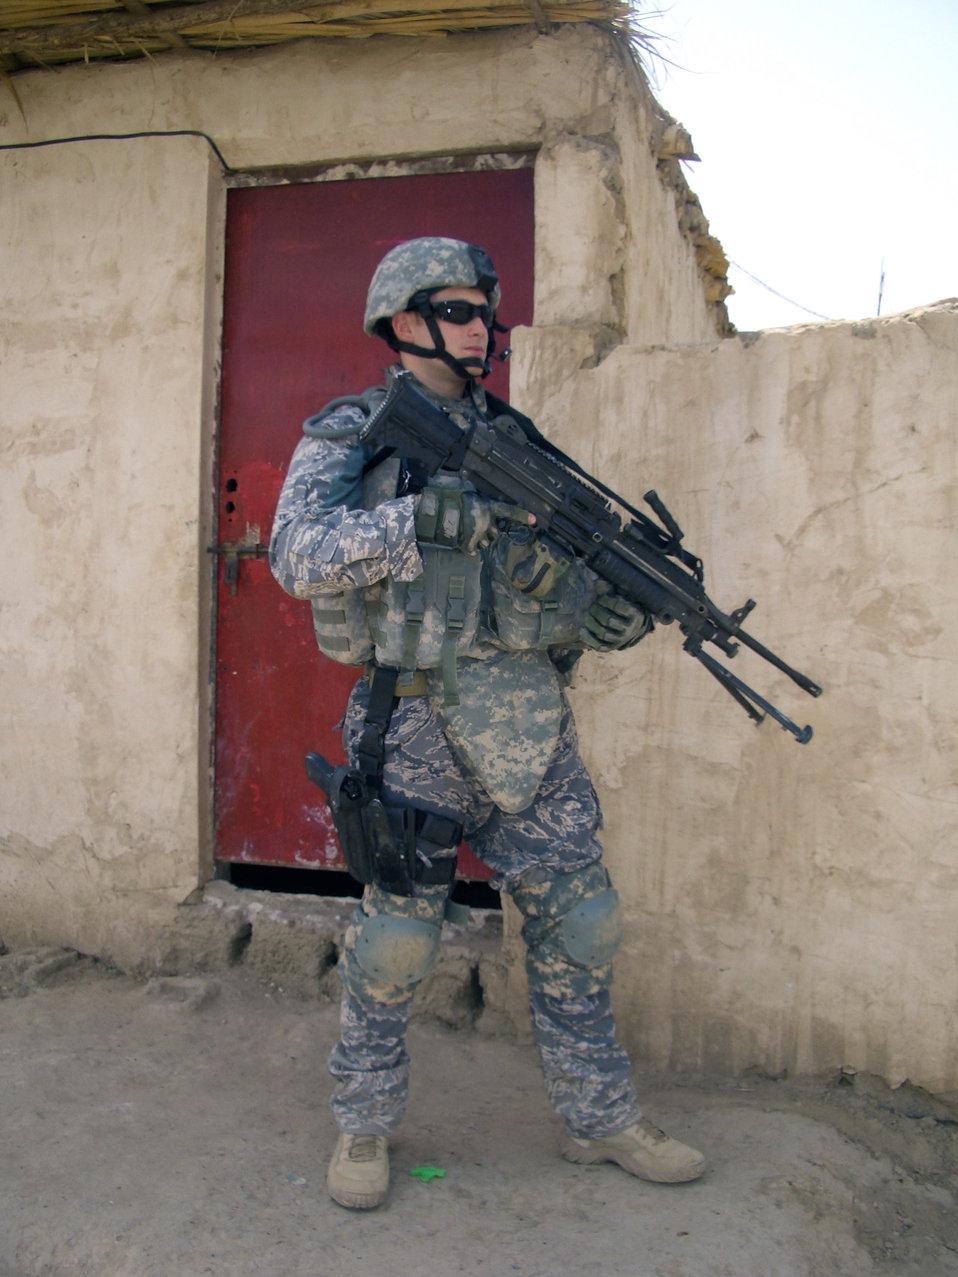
New battle gear improves capabilities for combat Airmen

A battlefield Airmen stands guard wearing the new airman battle system-ground ensemble. The ABS-G provides battlefield Airmen with fire resistance and tactical integration with body armor. Distribution will begin in February 2009, and it will most likely be in testing phase for 18 to 24 months.